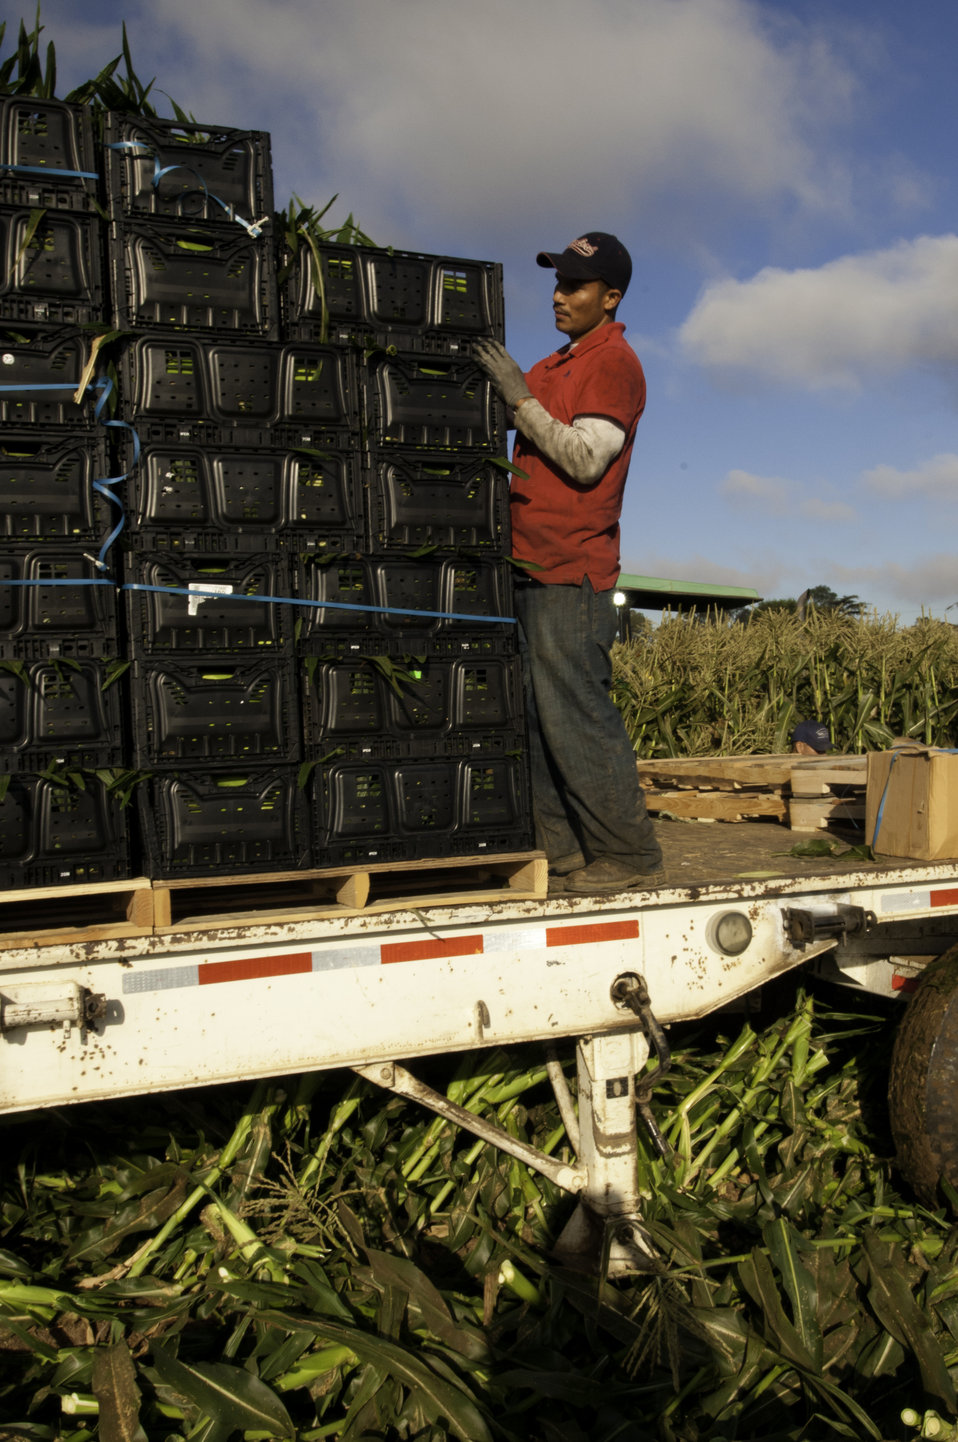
Migrant workers harvest corn on Uesugi Farms in Gilroy, CA on Wednesday, Aug. 28, 2013.